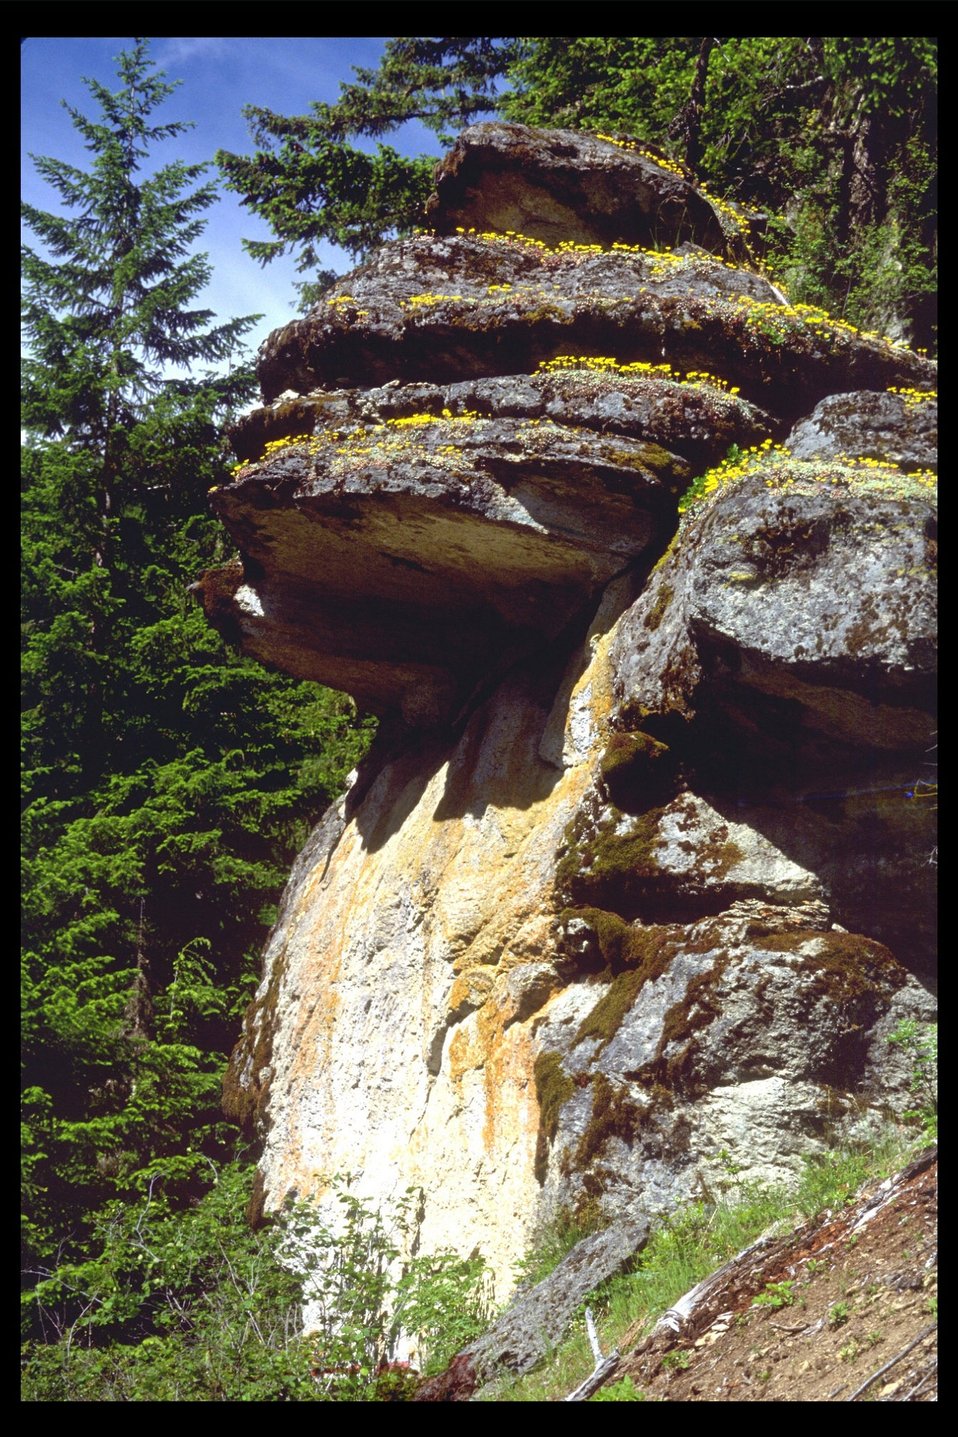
Broadleaf Sedum, also called the Pacific Stonecrop, (Sedum spathulifolium) on a rock formation along Upper Trail Creek.